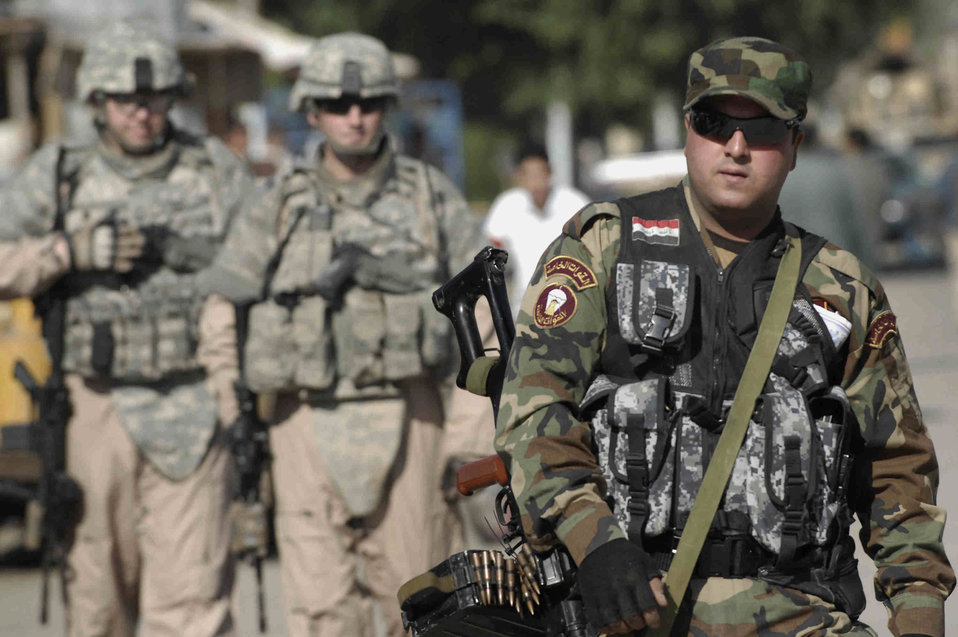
Security forces unit provides combat support to Iraq

Security personnel accompany an Iraqi national policeman of the criminal investigations division on a walking patrol. They are meeting Iraqi civilians and handing out leaflets in the Rashid community of southern Baghdad, Iraq, December 2008. The Airmen are assigned to Detachment 3, 732 Expeditionary Security Forces Squadron with the 716th Military Police Battalion.